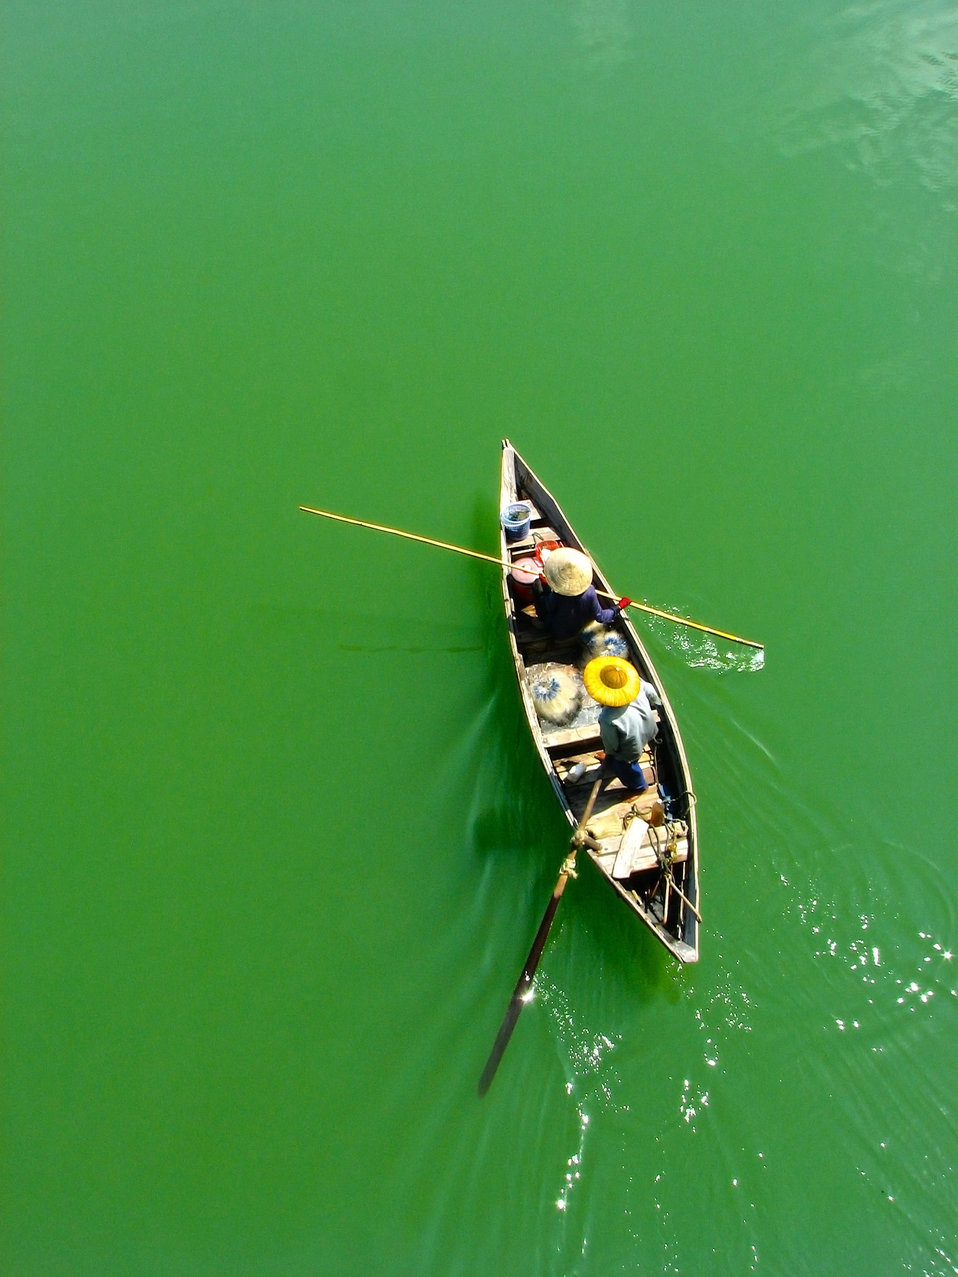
Go fishing

A couple is fishing in the lagoon lap an, lang co, hue, vietnam,.